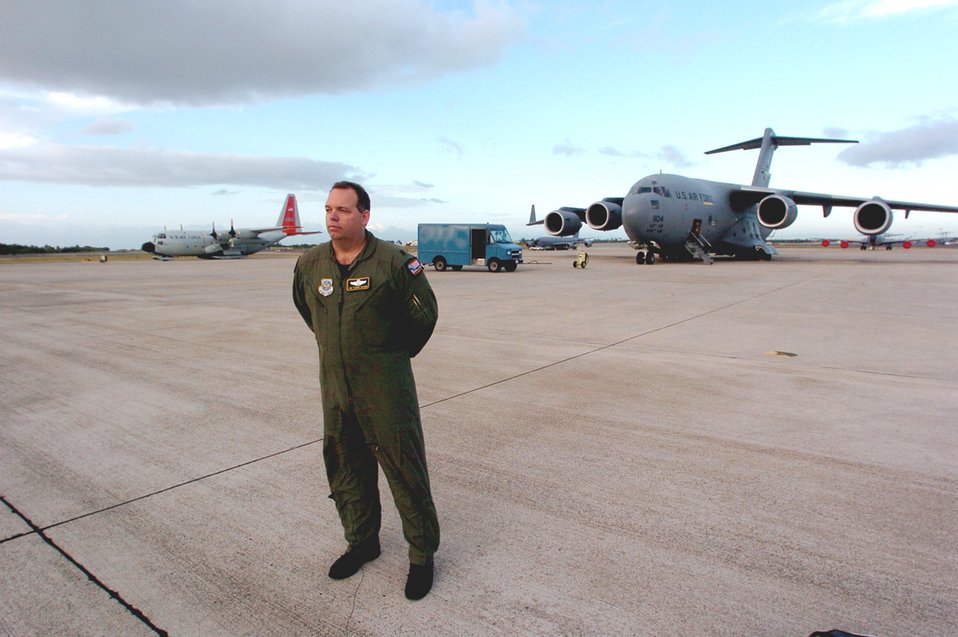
Operation Deep Freeze mission wraps up

Lt. Col. Jim McGann stands on the Hickam flightline in front of a C-17 Globemaster III from McChord Air Force Base, Wash., and an LC-130 Hercules from the 109th Airlift Wing at Scotia, New York. The 2006-2007 season of the 13th Air Force-led Joint Task Force-Support Forces Antarctica, Operation Deep Freeze, wrapped up Feb. 26 with the redeployment of the aircraft from Christchurch, New Zealand. This unique joint and total force mission has supported the National Science Foundation and U.S. Antarctic Program since 1955.